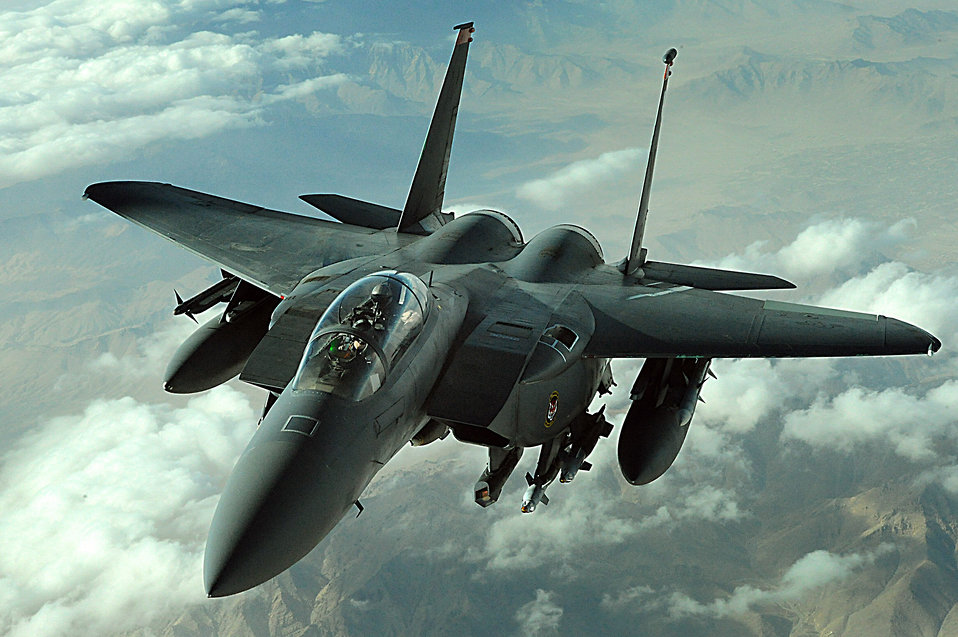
Feb. 16 airpower summary: F-15E bombs encampment

An F-15E Strike Eagle flies a combat mission over Afghanistan in support of Operations Enduring Freedom. The Strike Eagle is a dual-role fighter designed to perform air-to-air and air-to-ground missions.